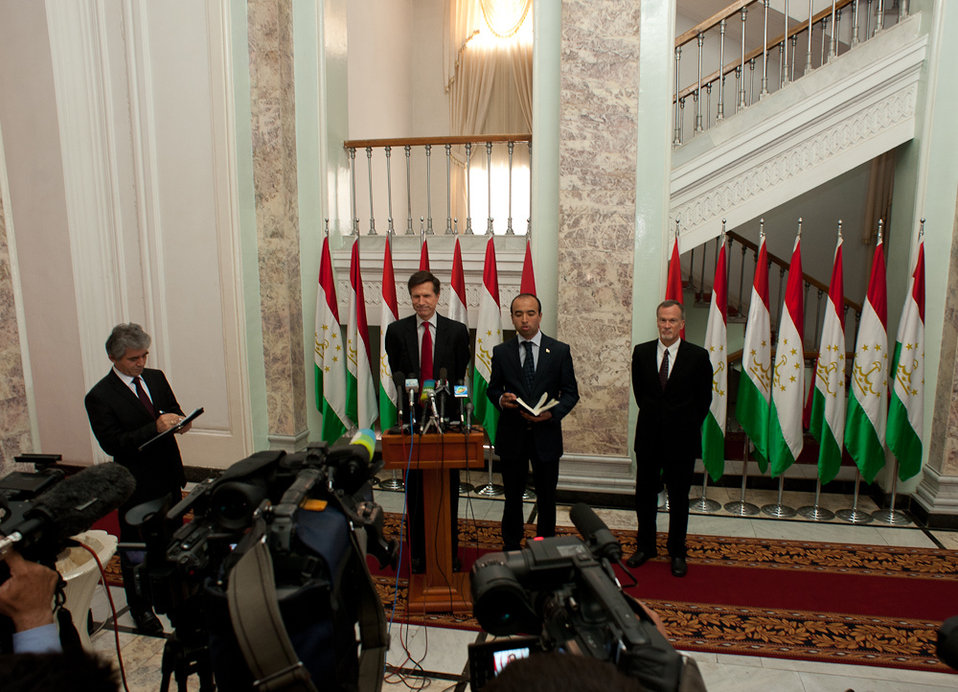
Assistant Secretary Blake Leads U.S. Government-Interagency Delegation to U.S.-Tajikistan Annual BIlateral Consultations

U.S. Assistant Secretary of State for South and Central Asian Affairs, Robert O. Blake, Jr. leads the U.S. government-interagency delegation to the second U.S. - Tajikistan Annual Bilateral Consultations in Dushanbe, Tajikistan, April 11 - 12, 2011. [Damian Wampler/ State Department photo/ Public Domain]